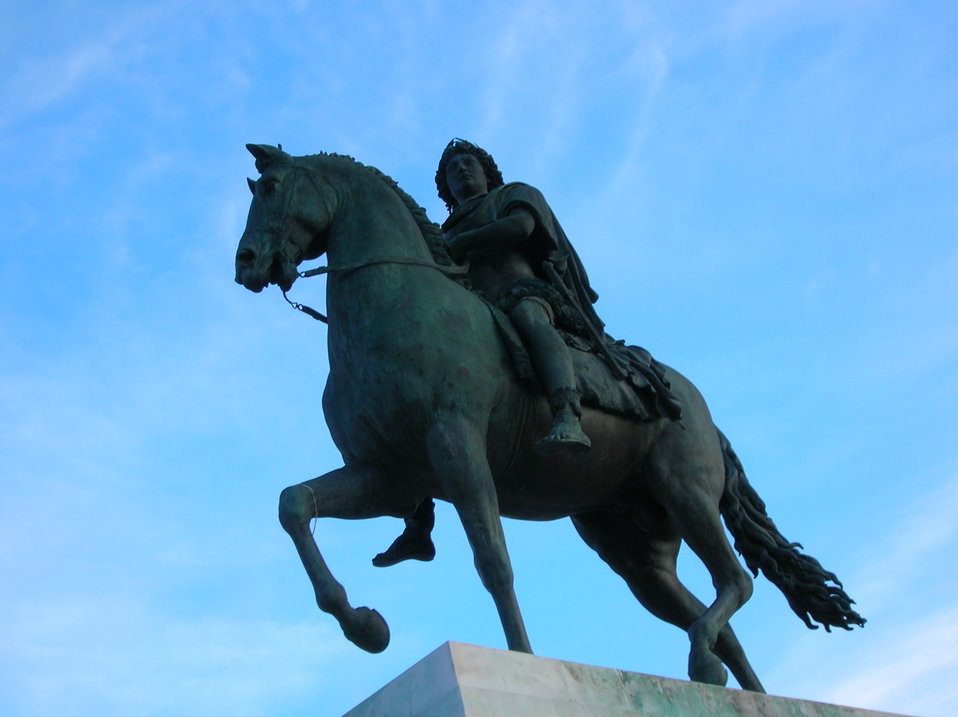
Fran√ßais†: Statue de Louis XIV sur la Place Bellecour √† Lyon.